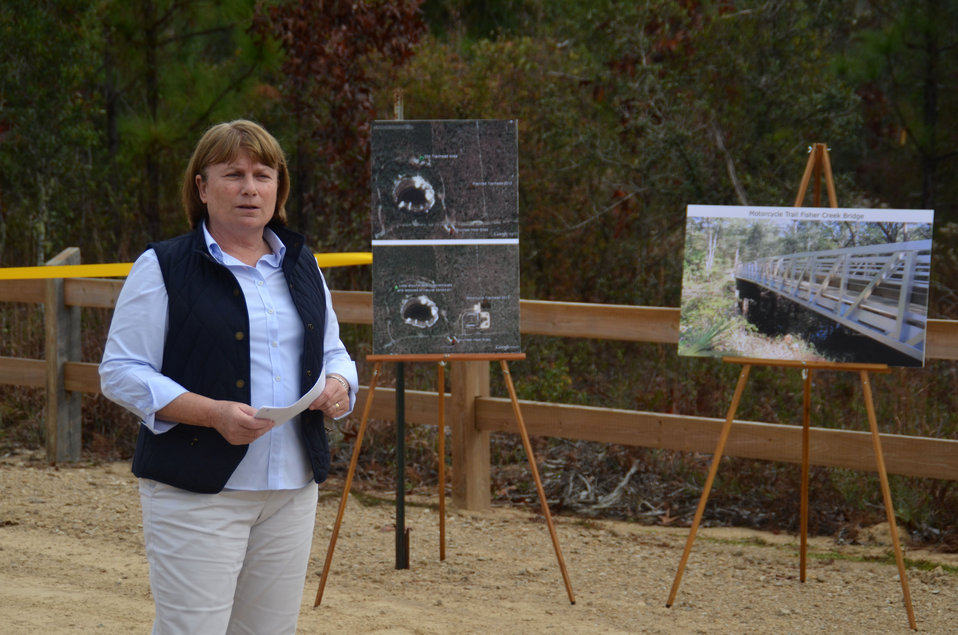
motorcyle Fla 3

Florida Department of Environmental Protection Alex Weiss discusses the benefits of the recently completed Springhill Motorcycle Trailhead on the Apalachicola National Forest to a crowd gathered for its grand opening. The new facility is a short distance from Tallahassee, FL.